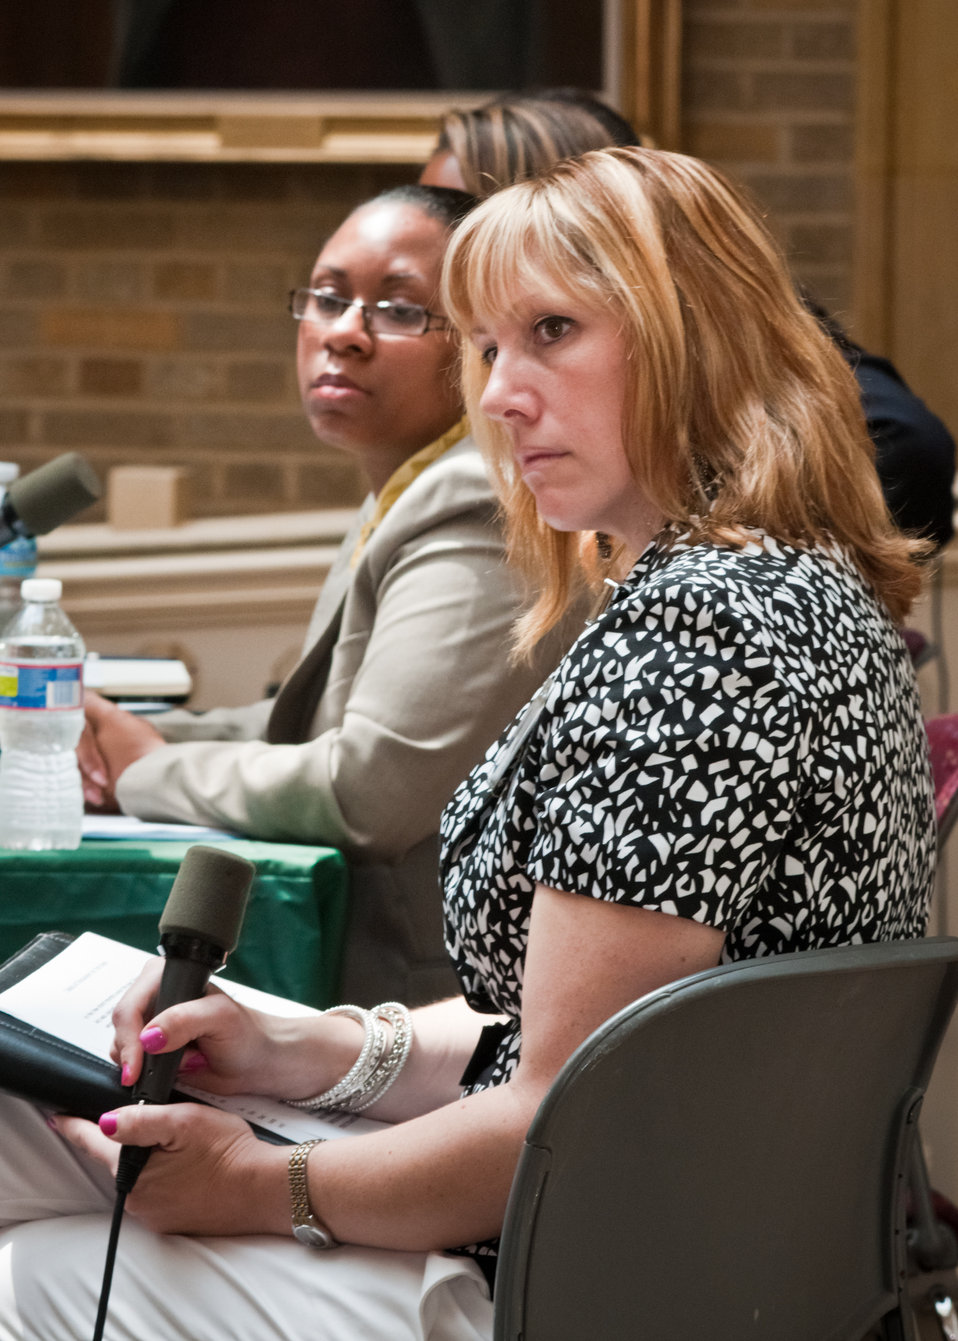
Robyn Poole (left), WorkLife Program Lead Specialist, Federal Deposit Insurance Corporation and Mika Cross (right), Office of Human Resources Management, Departmental Management and Mistress of Ceremonies listen questions and feedback from employees during a “Telework Program Party/Brown Bag” event on the patio of the Jamie Whitten Building of United States Department of Agriculture, in Washington, DC, on Tuesday, June 7, 2011. The event included an interactive telework panel and exhibits from the field of telework, telecommuting and mobile work environments. The event was open to all USDA employees, supervisors, managers, human resources staff and USDA telework program coordinators.